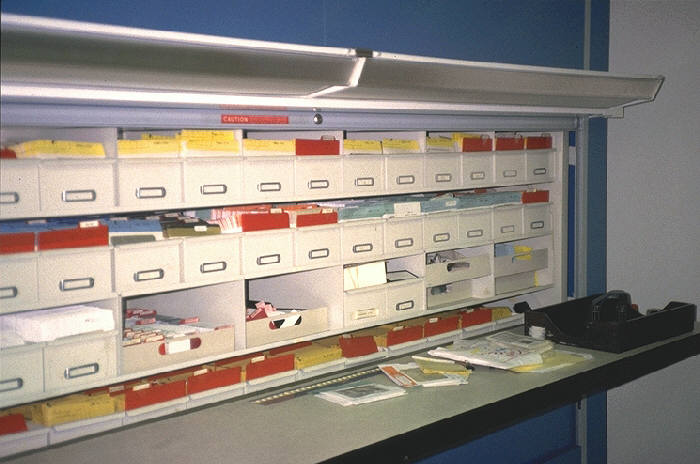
Motorized was the bin in the former CDC Still Picture Archive, Building 2, Clifton Road.